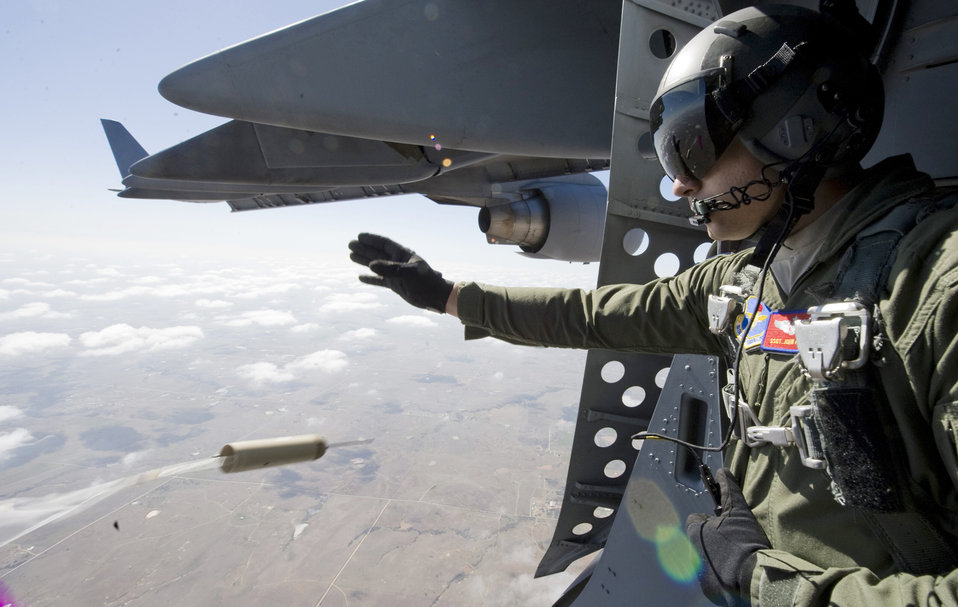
Airdrop training coming to Altus AFB

Staff Sgt. John Frisk releases a drop sonde March 18, 2010, at Altus Air Force Base, Okla. Sergeant Frisk is a C-17 Globemaster III loadmaster with the 58th Airlift Squadron.